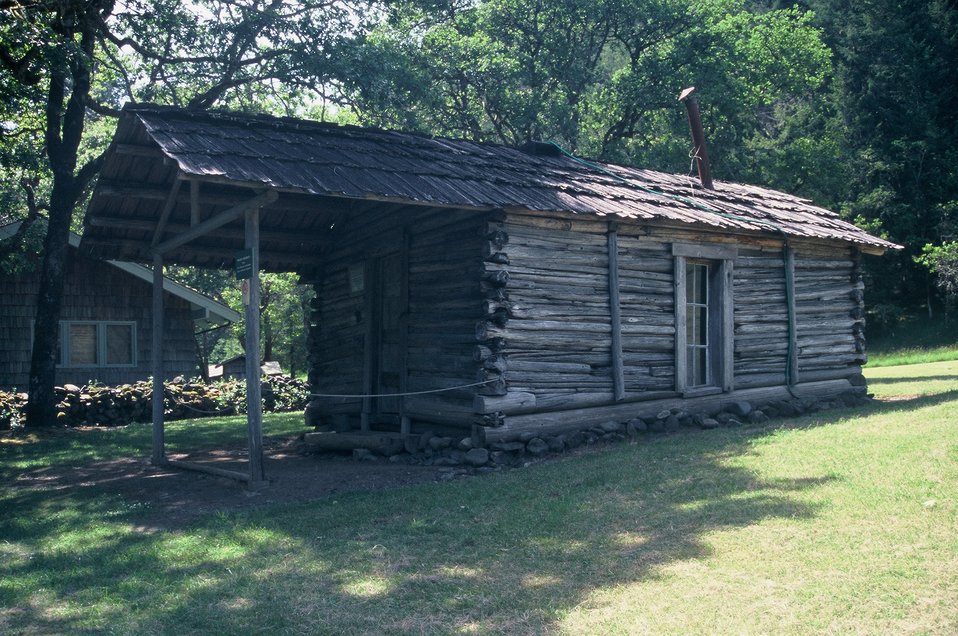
Wild section of the Rogue River from Grave Creek to Foster Bar May 19 to May 22.